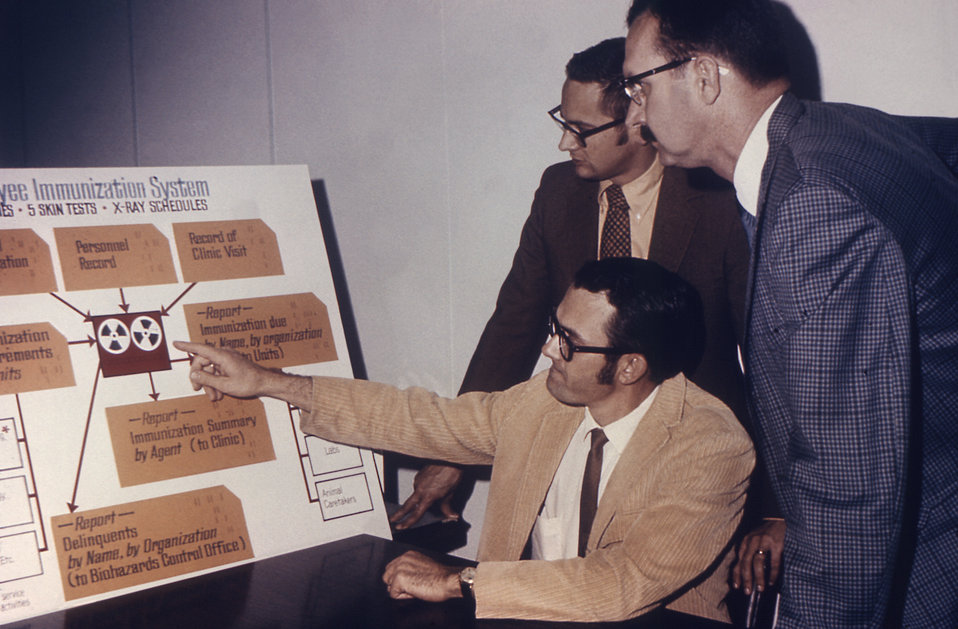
This image shows three systems analysts discussing the machinations associated with a proposed immunization scheduling and tracking system.